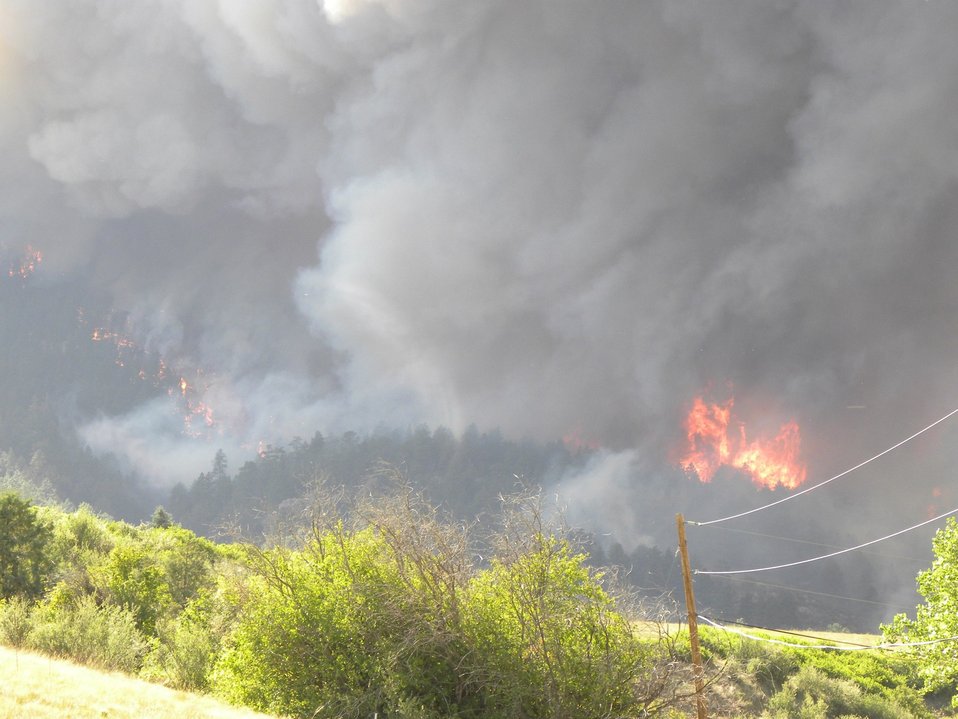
Smoke and flames rise in the air at the High Park Wildfire on the Arapaho and Roosevelt National Forests and Pawnee National Grassland on Tuesday, June 19, 2012. The High Park Wildfire located approximately 15 miles west of Fort Collins, CO has consumed over 65,738 acres of forest and grassland with approximately 189 homes destroyed. Over 1,773 personnel from the U.S. Forest Service (FS), state and local resources are fighting the wildfire and have achieved 55% containment as of June 20, 2012. The High Park Wildfire began on June 9. 2012 because of a lightening strike on private land.